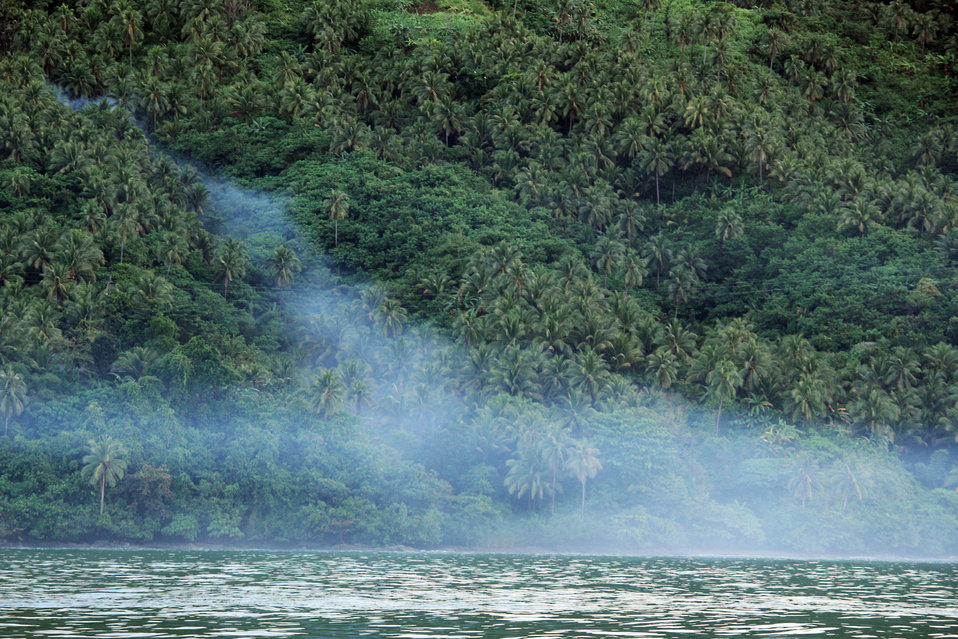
Fog in the mountain.